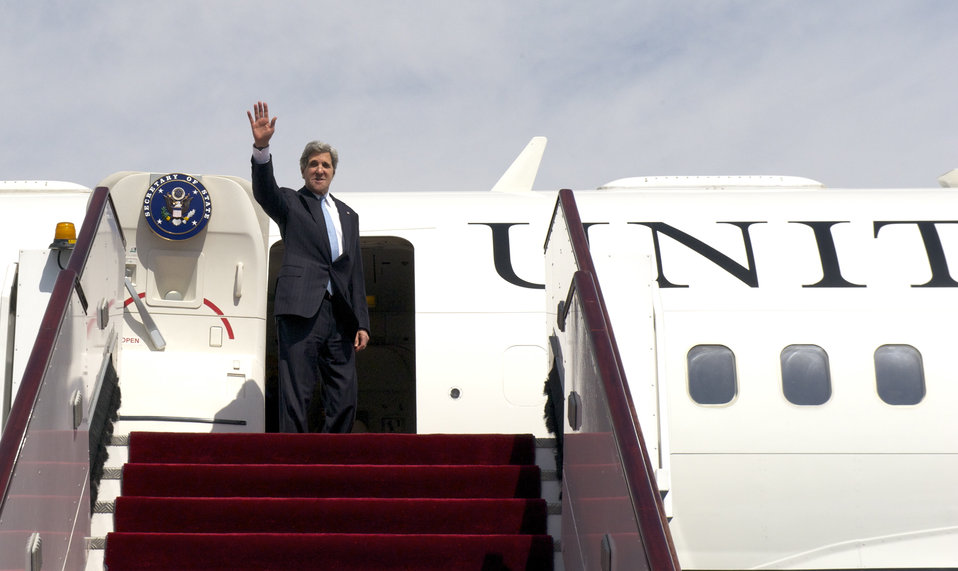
Secretary Kerry Waves Goodbye to Doha

U.S. Secretary of State John Kerry waves goodbye to Doha, Qatar, before his plane departs en route home after an 11-day trip on March 6, 2013.